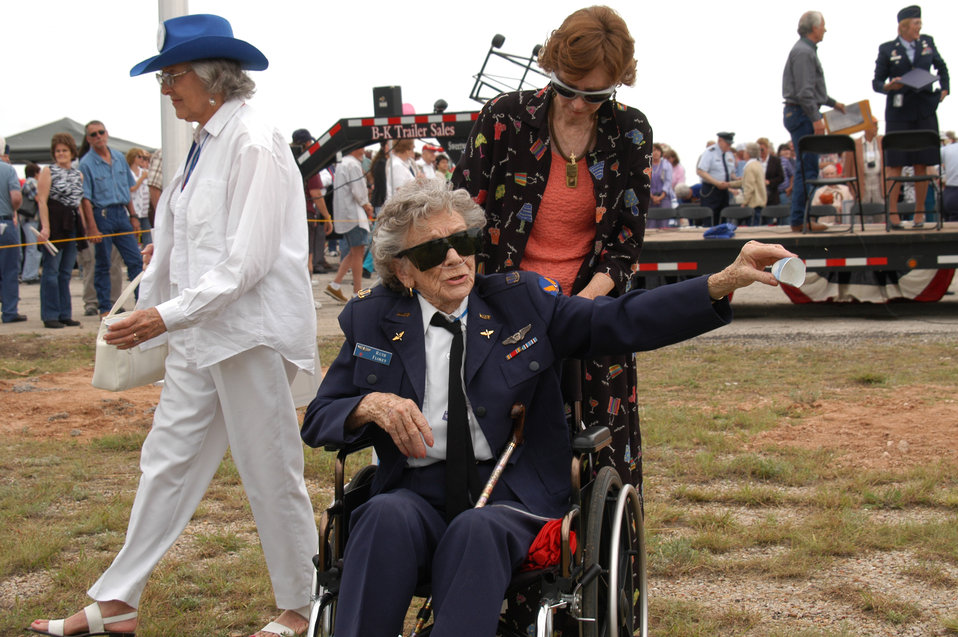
World War II women warriors pass on history, heritage

AVENGER FIELD, Texas -- Ruth Florey, one of the Women's Airforce Service Pilots, tosses seeds into the wind as part of the opening ceremonies for the National WASP World War II Museum here May 28. The seed ceremony symbolized the planting of the traditions and heritage the women created at the museum which will grow for future generations.